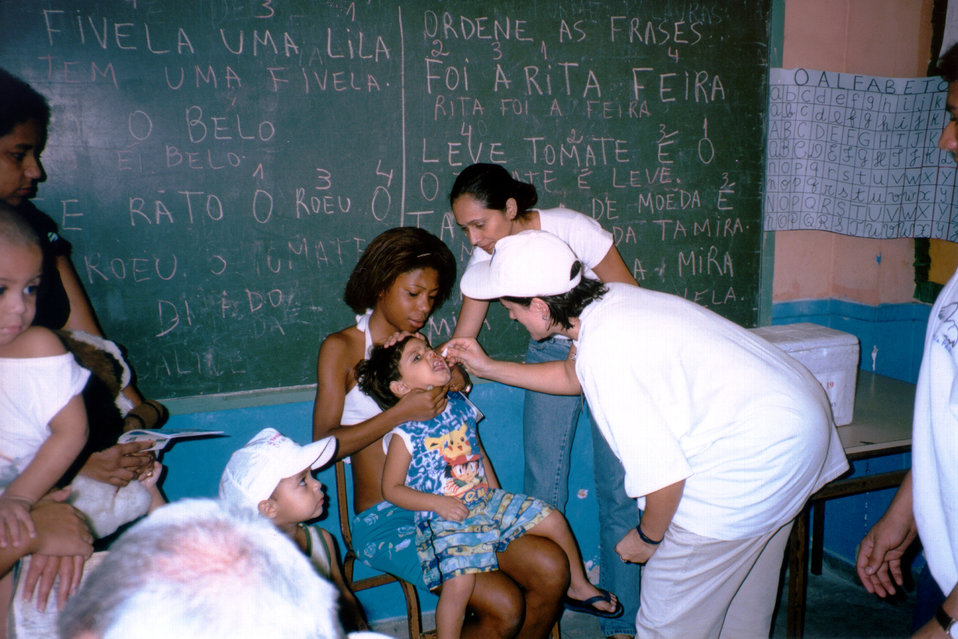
Here Becky Prevots (Cntr) is administering polio vaccine during National Immunization Day in Rocinha, Rio De Janeiro, Brazil.